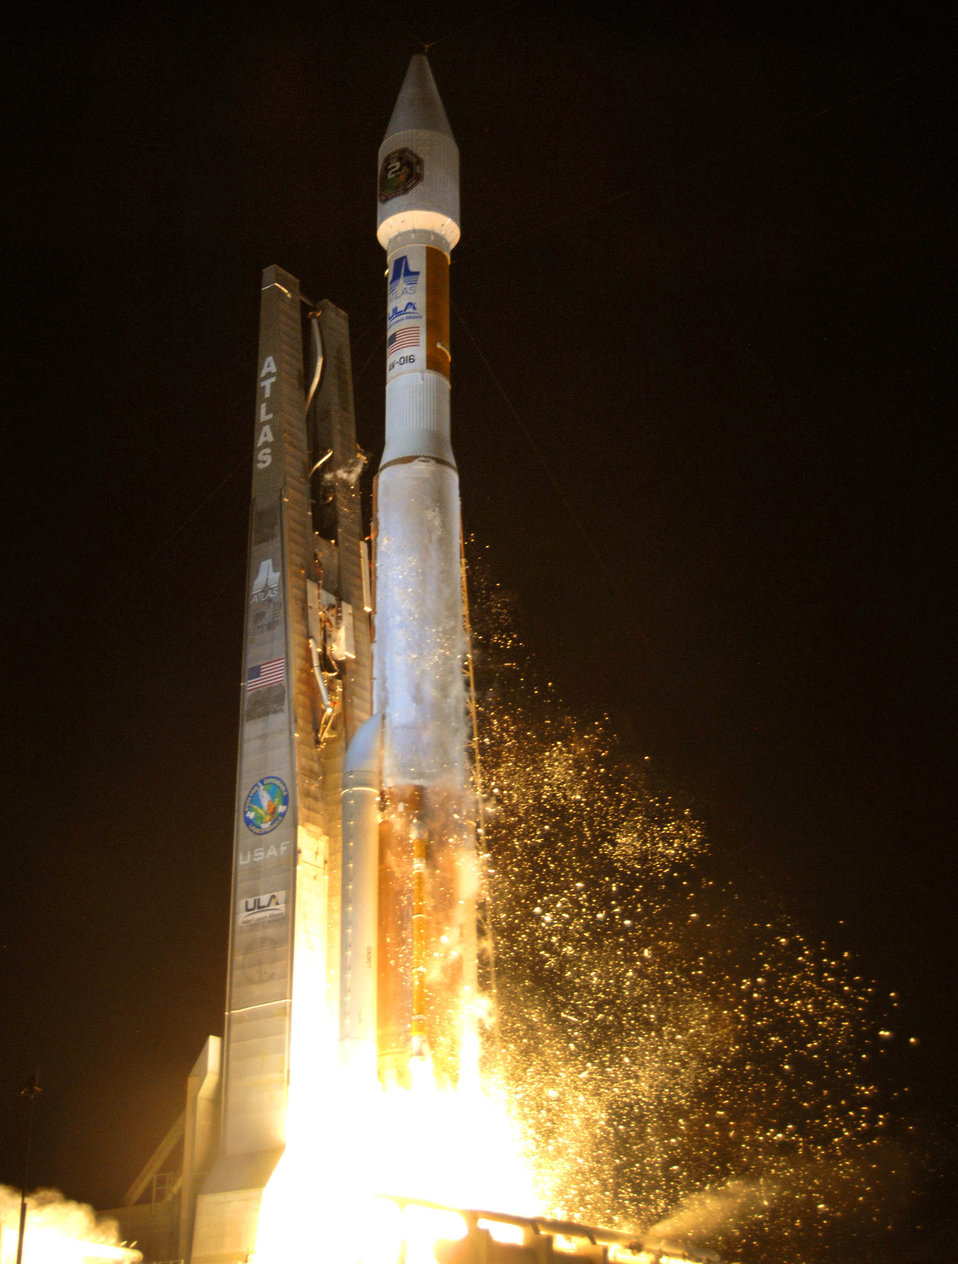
Airmen help launch satellite into orbit

A United Launch Alliance Atlas V rocket carrying the Air Force's second Wideband Global Satellite Communications system lifts off from Space Launch Complex-41 April 3 at Cape Canaveral Air Force Station, Fla. After a 31-minute flight, WGS-2 was placed successfully in orbit where it will provide enhanced communication abilities to troops in the field.